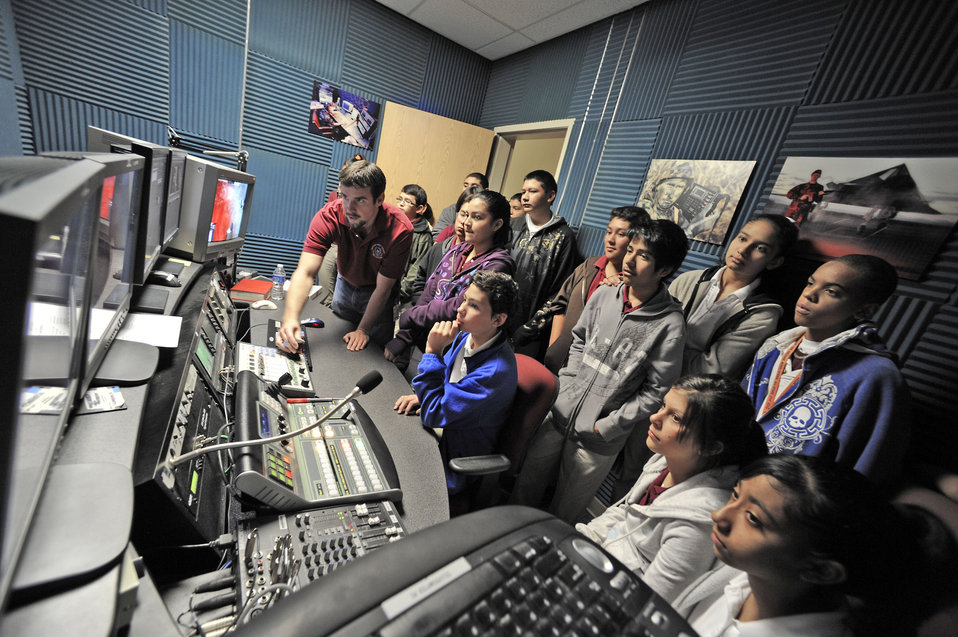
Middle school students tour Defense Media Activity-San Antonio

David Fitzroy shows students how to focus a newsroom camera in a video broadcast suite Nov. 6, 2009, at the Defense Media Activity-San Antonio. Mr. Fitzroy is a broadcast producer at DMA-SA and the students are from nearby Rhodes Middle School.